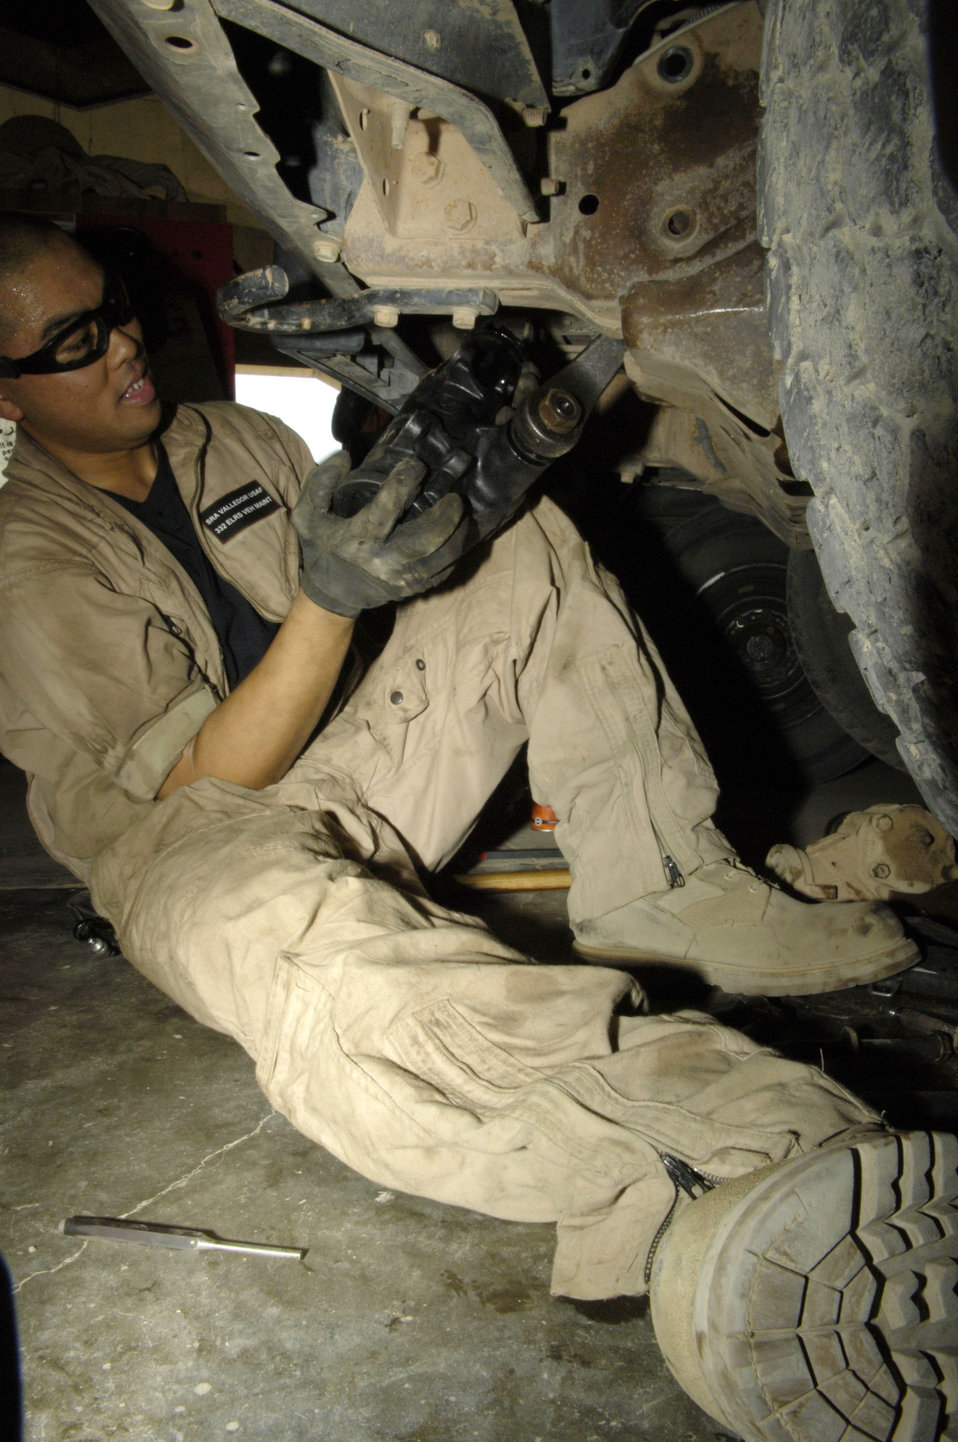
Vehicle maintenance

Senior Airman Jason Valledor performs maintenance on a vehicle at Balad Air Base, Iraq, on July 21. Airman Valledor is a vehicle mechanic assigned to the 332nd Expeditionary Logistics Readiness Squadron and is deployed from Ramstein AB, Germany.